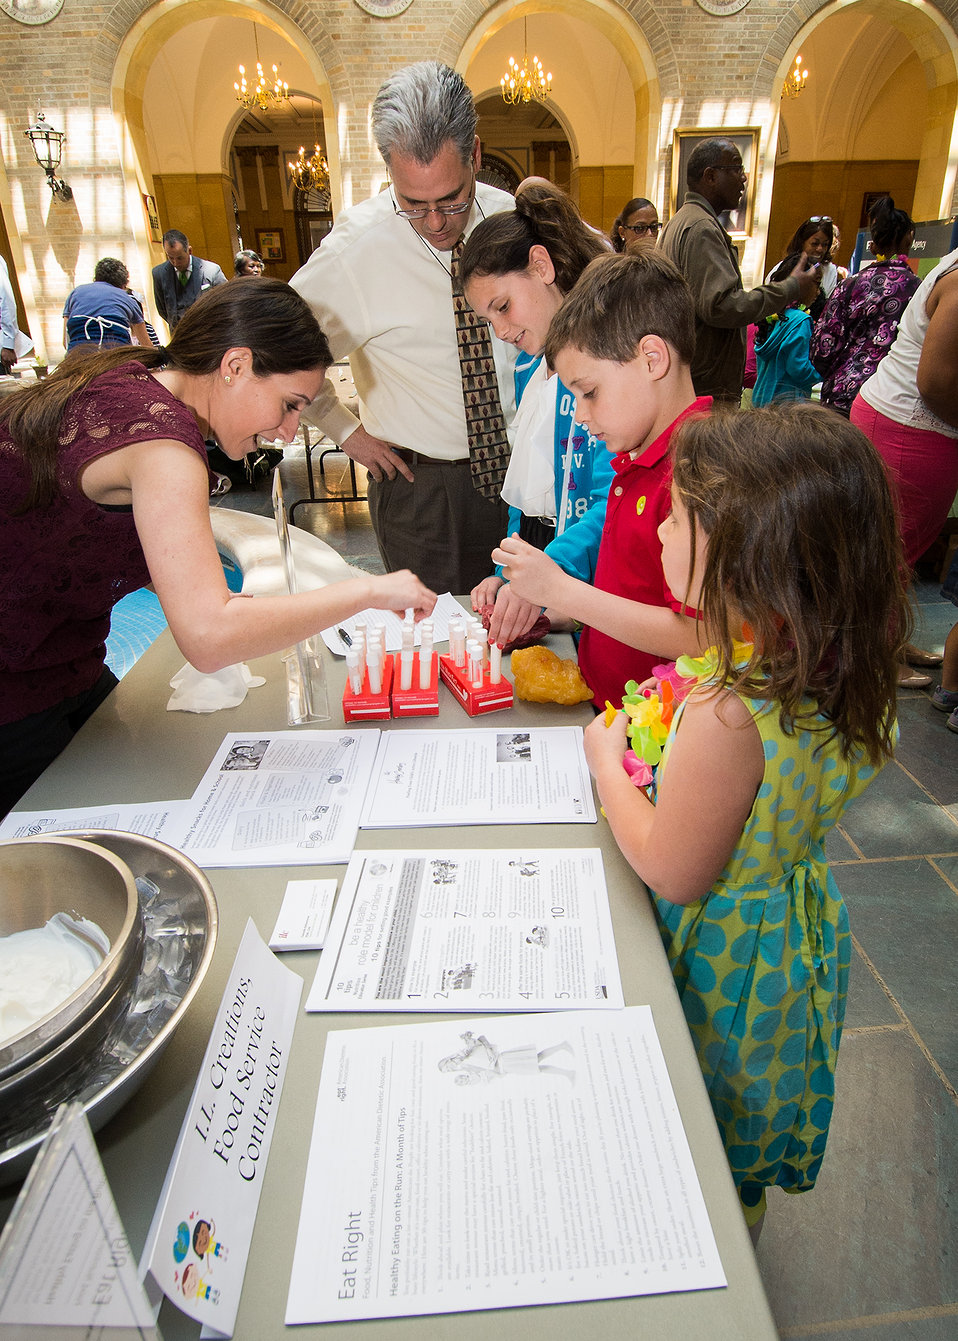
Susan McGowan explains the fat content of certain foods to U.S. Department of Agriculture (USDA)Office of the Chief Financial Officer (OCIO) John Pirchio and his children Lindsay, Nick and Natalie at the I. L. Creations booth at USDA's annual “Bring Your Daughters and Sons to Work on Thursday, Apr. 24, 2014 in Washington, D.C. The event offers employees the opportunity to bring their children to work to experience what they do in their profession and offer insight into other careers atUSDA I. L. Creations has the cafeteria contract with USDA.